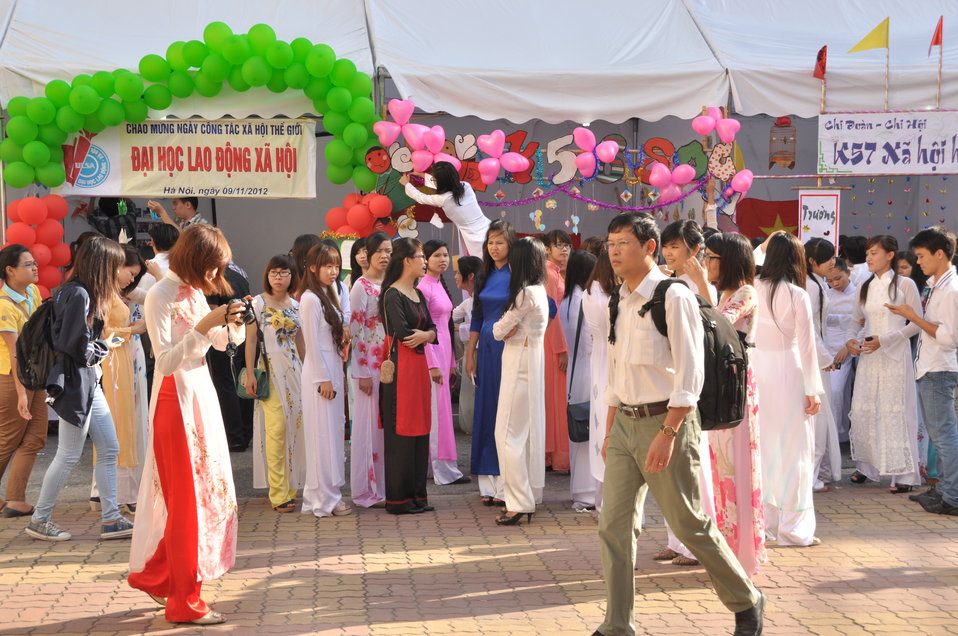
USAID Supports Social Work Education

Photo: @USAIDVietnam, November 9, 2012